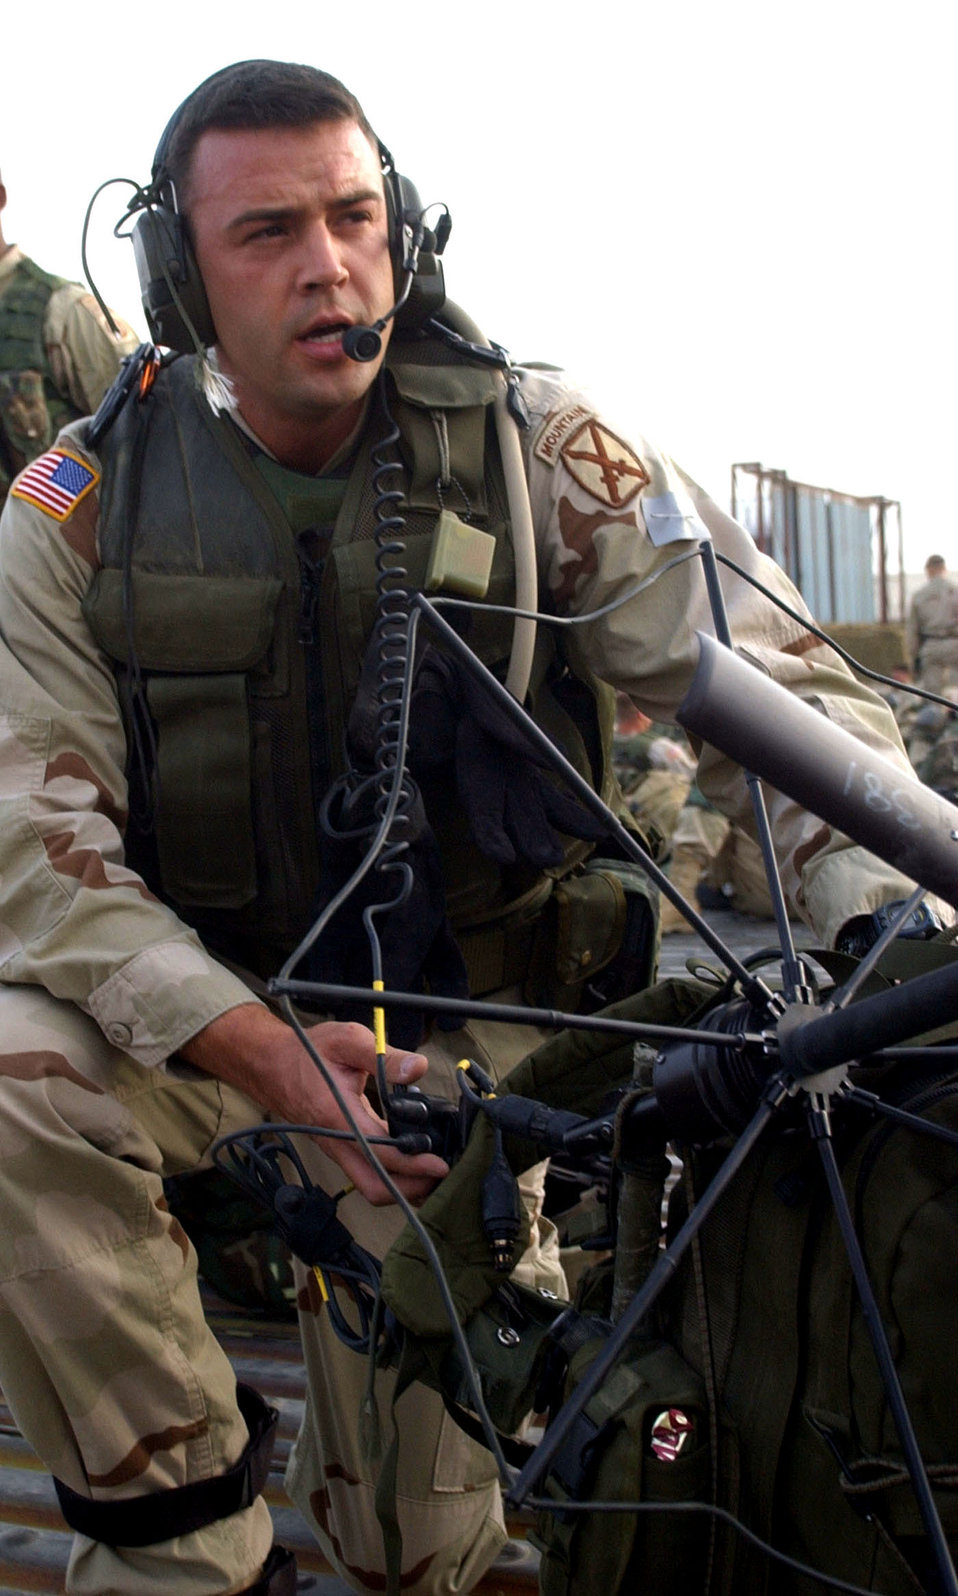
Stout

OPERATION ENDURING FREEDOM -- Capt. Danny Stout tests his radio equipment before heading out on a mission to the mountains of Afghanistan with the 2-505 Parachute Infantry Regiment of the 82nd Airborne Division. Stout, an air liaison officer and B-52 pilot, travels with the Army unit to call in close-air support missions against enemy troops.